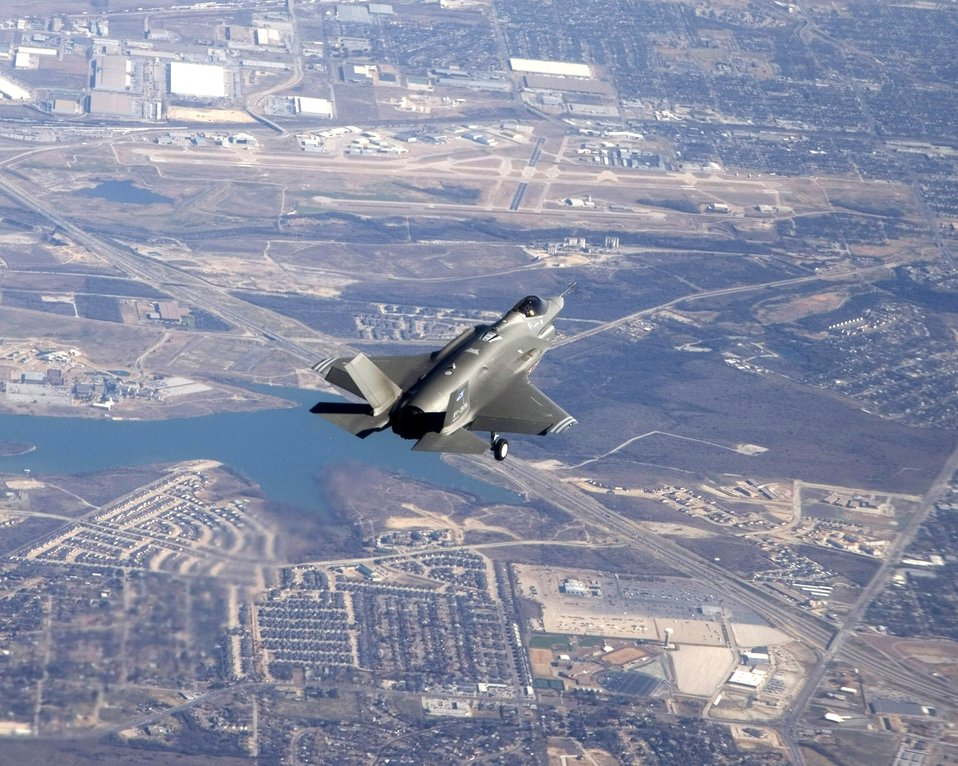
Lightning in sky for first time

The F-35 Lightning II Joint Strike Fighter makes its initial flight Dec. 15 over Fort Worth, Texas.